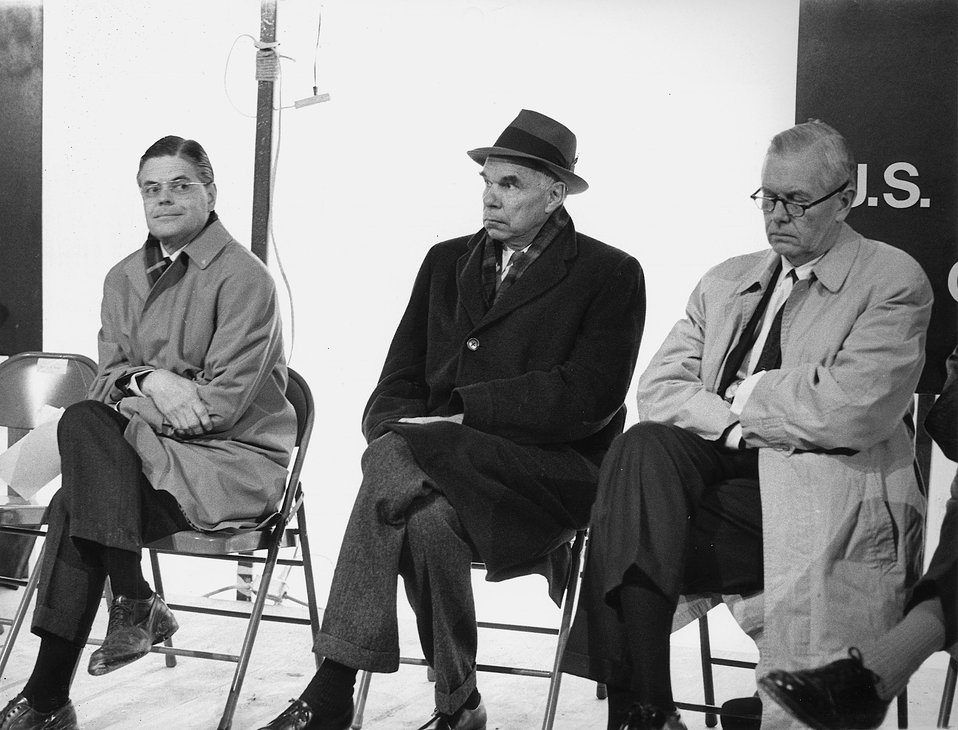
Robert Wilson, Director, National Accelerator Laboratory; Glenn Seaborg, Chairman, U.S. Atomic Energy Commission, and Gerald Tape, Commissioner, AEC. 12-01-68